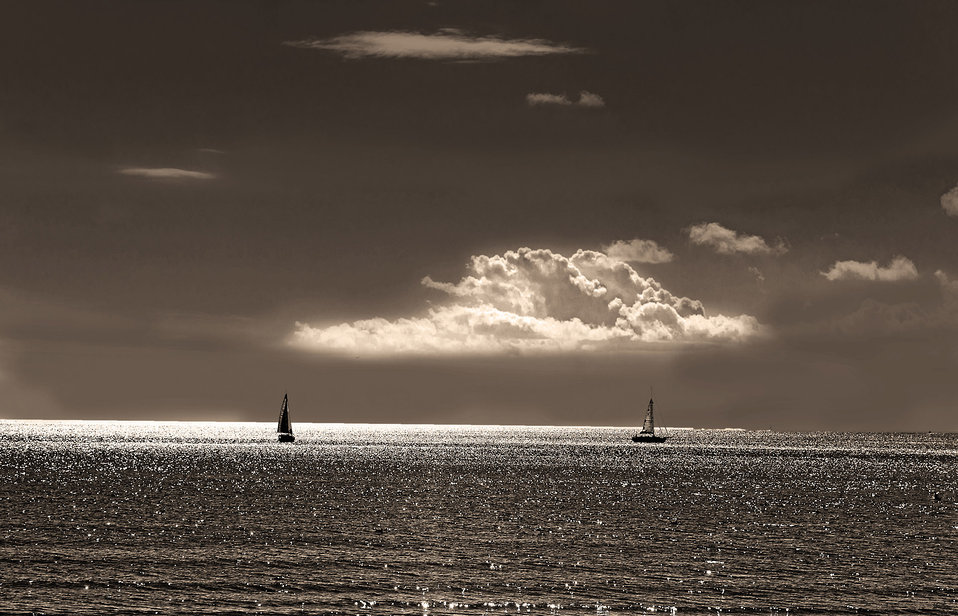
Sea - landscape.